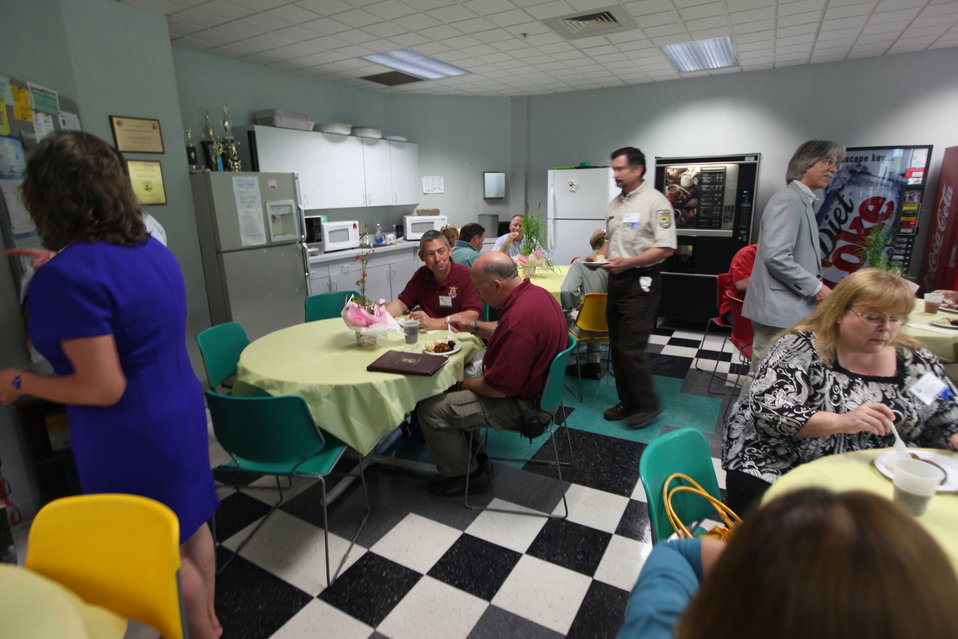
Northeast Region Employee Appreciation Awards

Luncheon